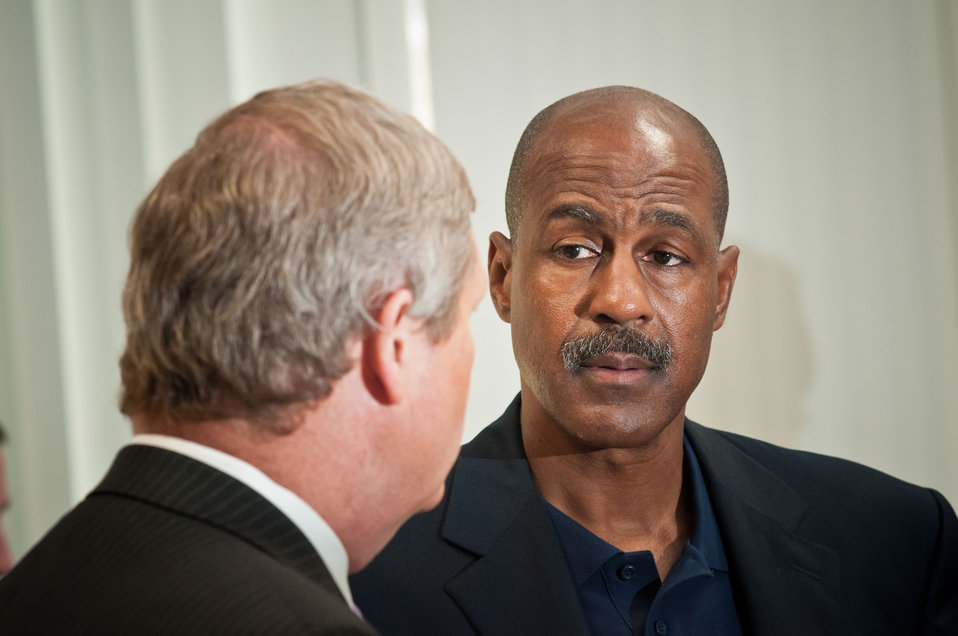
Agriculture Secretary Tom Vilsack met with Art Monk, Washington Redskins National Football League Hall of Famer prior to the United States Department of Agriculture’s 150th Anniversary celebration in Washington, D.C., on Tuesday, May 15, 2012. Monk and La Var Arrington, Washington Redskins, three time Pro-Bowler discussed and participated in the Fuel Up to Play 60 demonstration an in-school nutrition and physical activity program launched by the National Dairy Council and the National Football League, in collaboration with USDA, to combat childhood obesity.